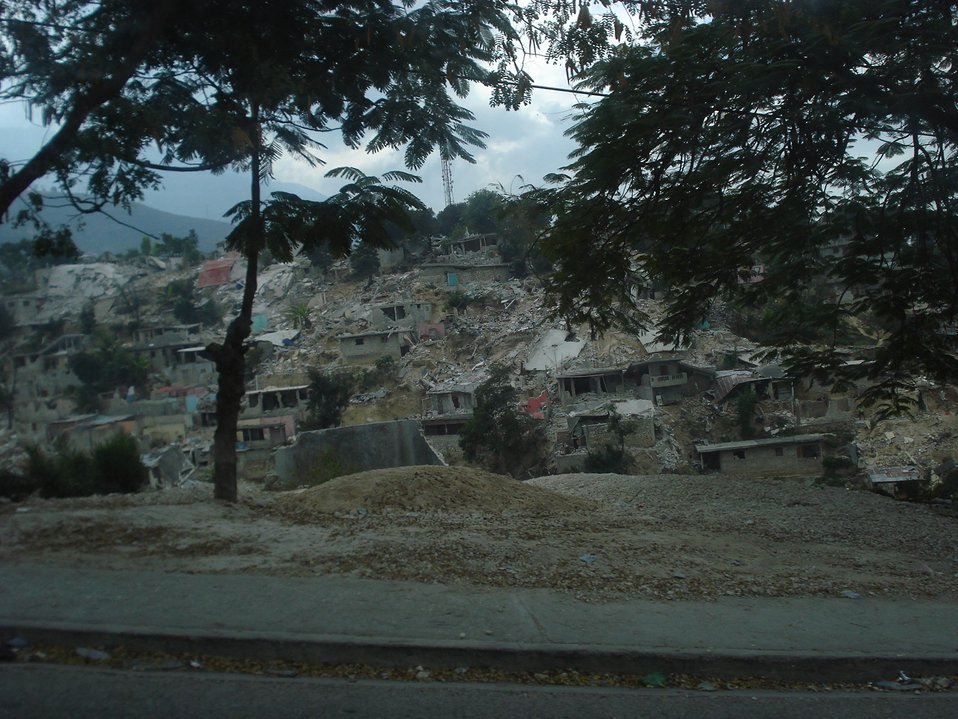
Collapsed Mountain (Haiti Earthquake - 2010)

Photos shot by team sent by the FCC to assist communications recovery in Haiti. Photos shot by team sent by the FCC to assist communications recovery in Haiti.